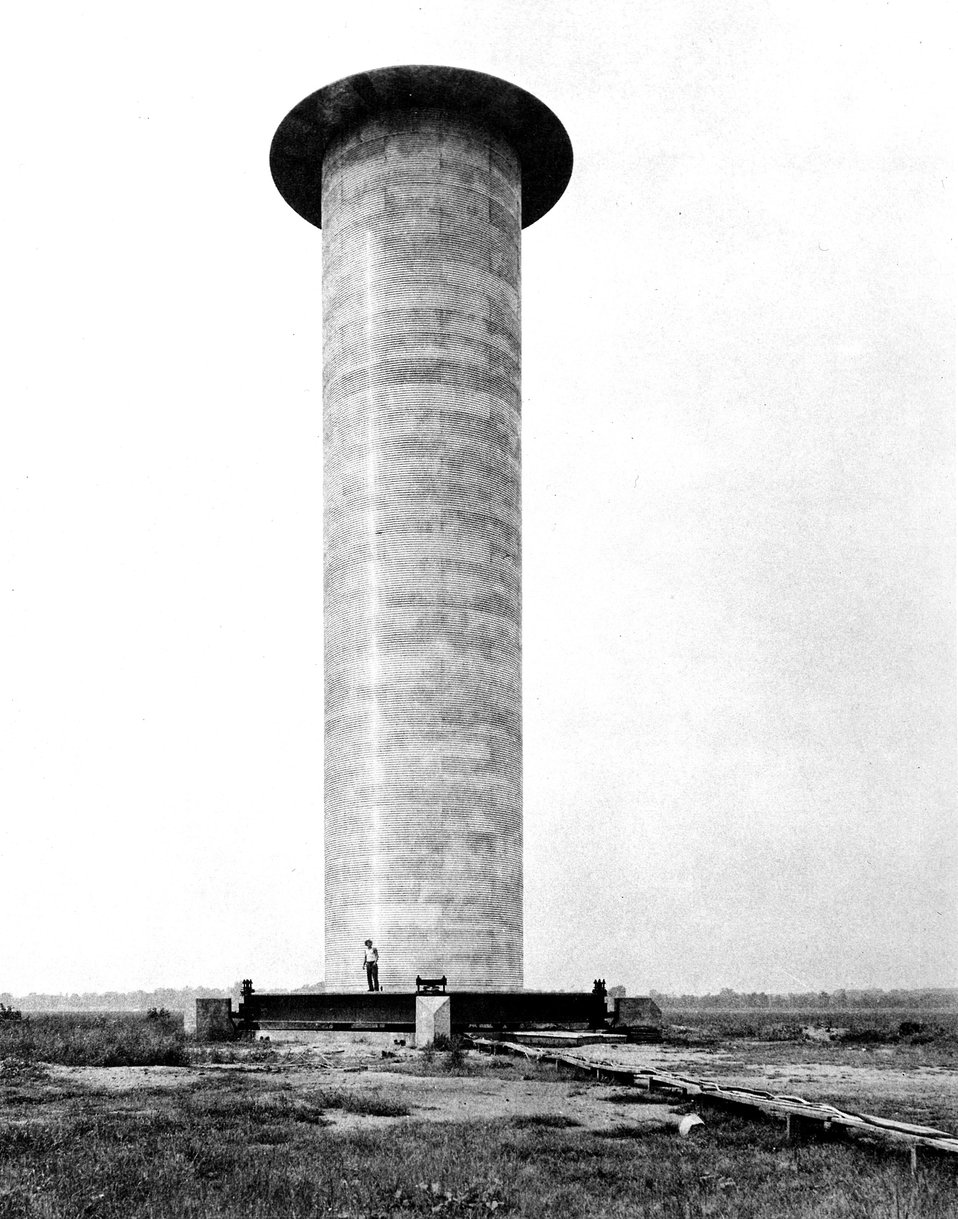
The Madaras concept for generating electricity from wind power is being re-investigated by the Energy Research and Development Administration. c. 1977